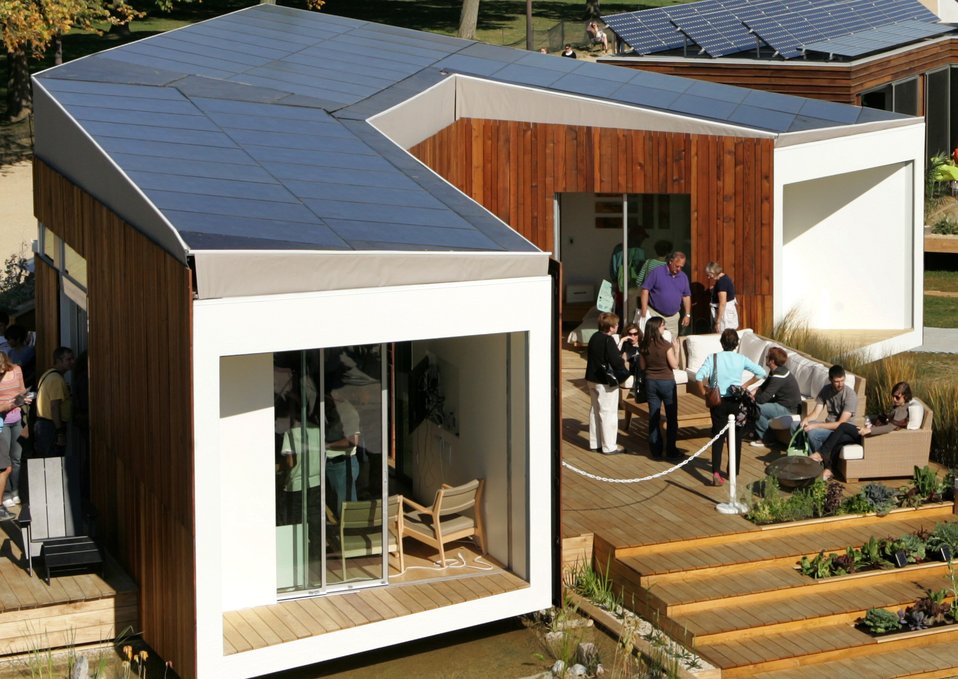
Visitors tour Team California's solar-powered house during the U.S. Department of Energy Solar Decathlon on the National Mall in Washington, DC, October 11, 2009. The team won third prize in the decathlon.